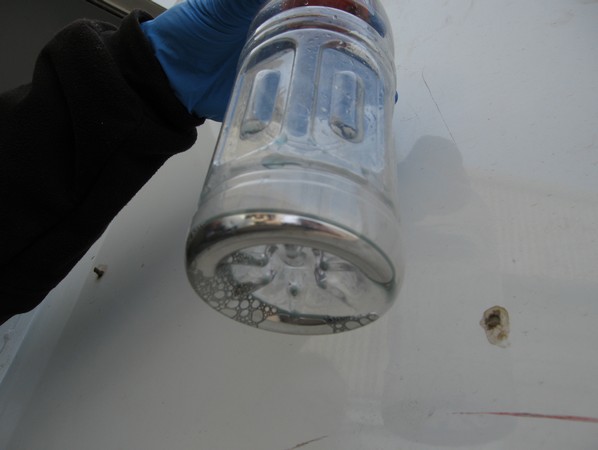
That's not for drinking

A recovered bottle with mercury in it, which presumably was one of the containers students transported mercury in and later played with at an Arizona high school.